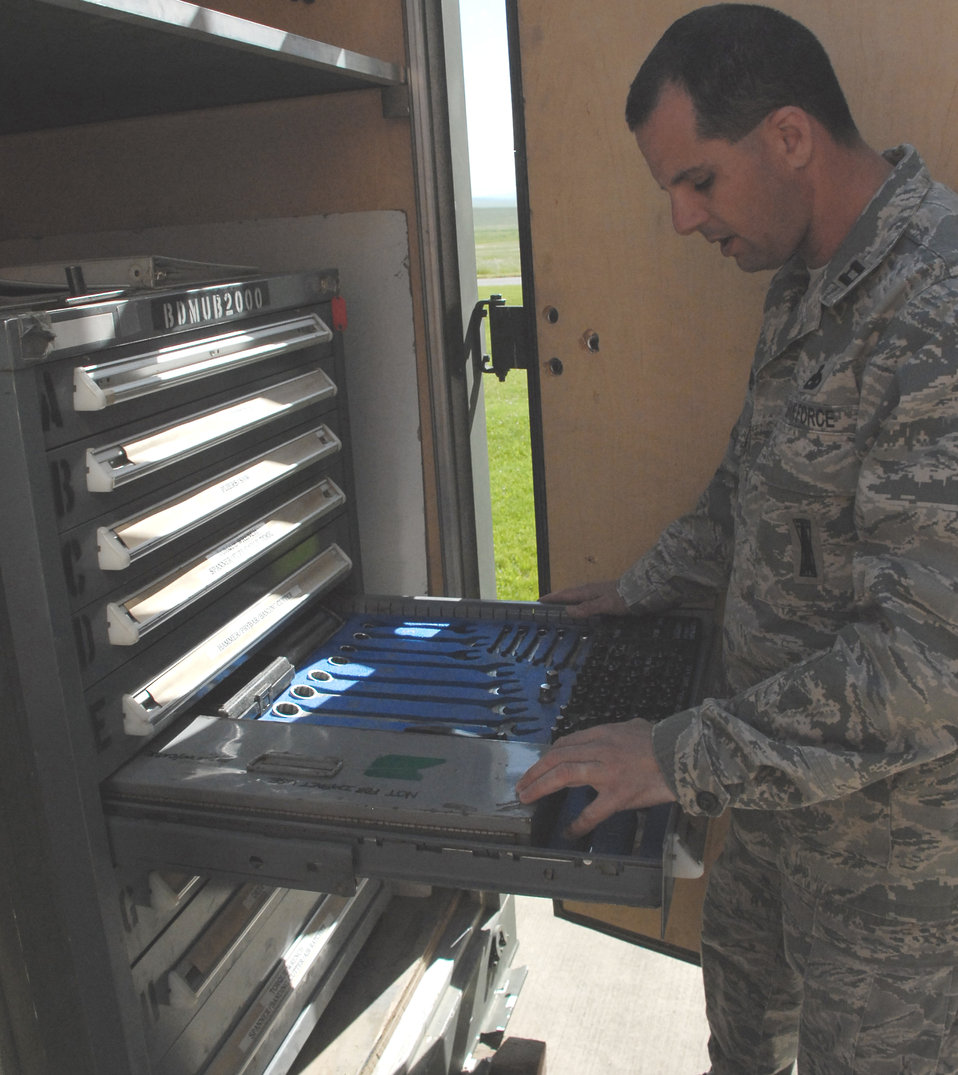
Squadron Airmen improve following improvement event

Capt. Mathew Drossner searches for tools during a AFSO-21 event April 3. The serviceable process was established as part of a Rapid Improvement Event held last week to assist the 9th MUNS in maximizing value and minimizing waste. Captain Drossner is assigned to the 9th Munitions Squadron.